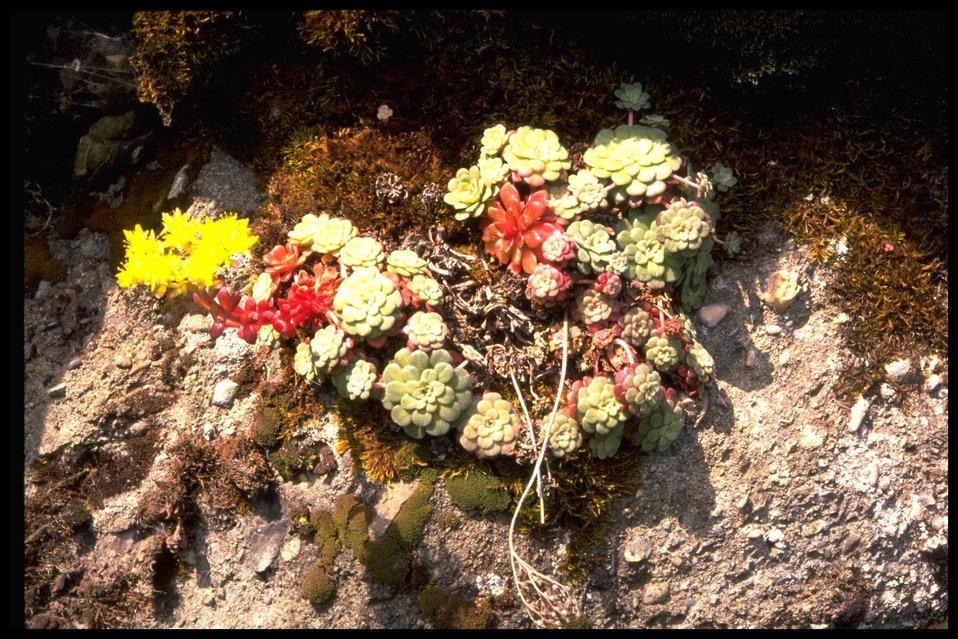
Sedum spathulifolium ssp. purdyi, commonly known as Purdy's Stonecrop.